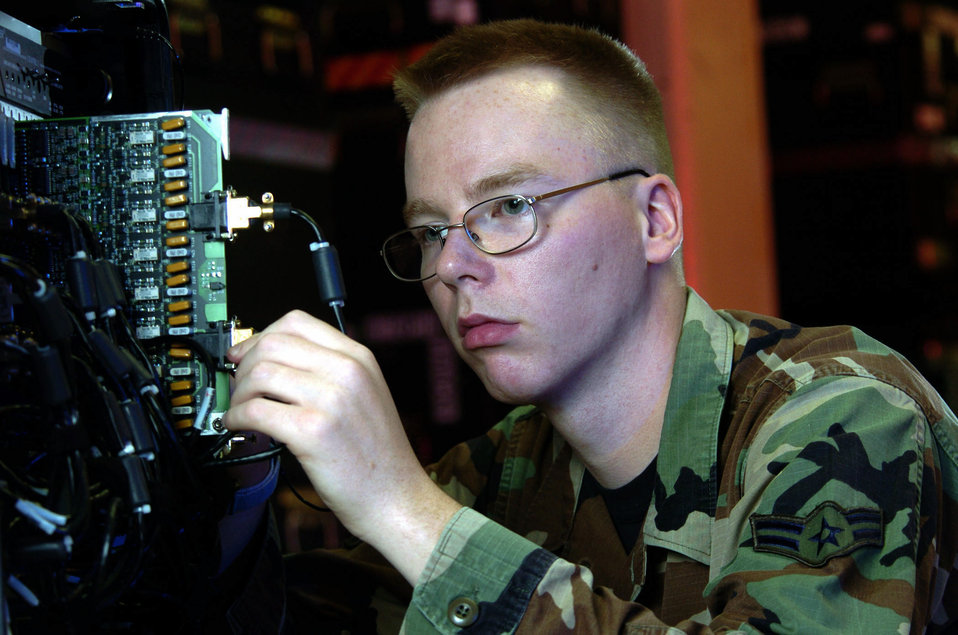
Eye spy

KADENA AIR BASE, Japan -- Airman 1st Class Hayes Hazen changes the voice card on a basic access module during an inspection here. He is a communications technician assigned to the 353rd Operations Support Squadron.